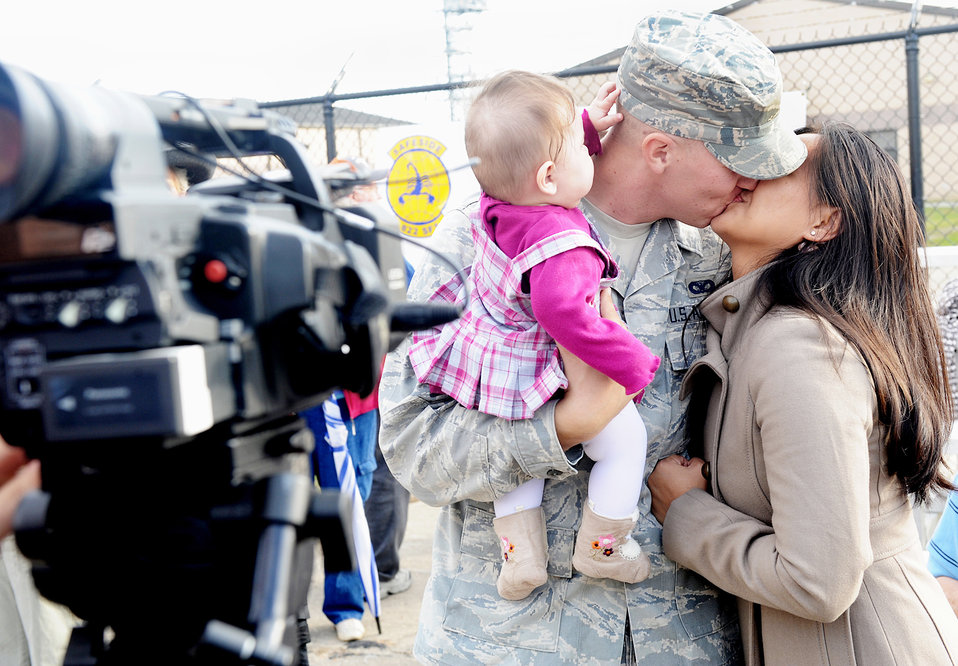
Moody Airmen return home

Airman 1st Class Timothy Canup, 822nd Security Forces Squadron member, is welcomed home by his wife Maricris and daughter Shaela at Moody Air Force Base, Ga., on Dec. 8, 2009. During the deployment, Airman Canup's daughter was born and this is the first time he has seen her.